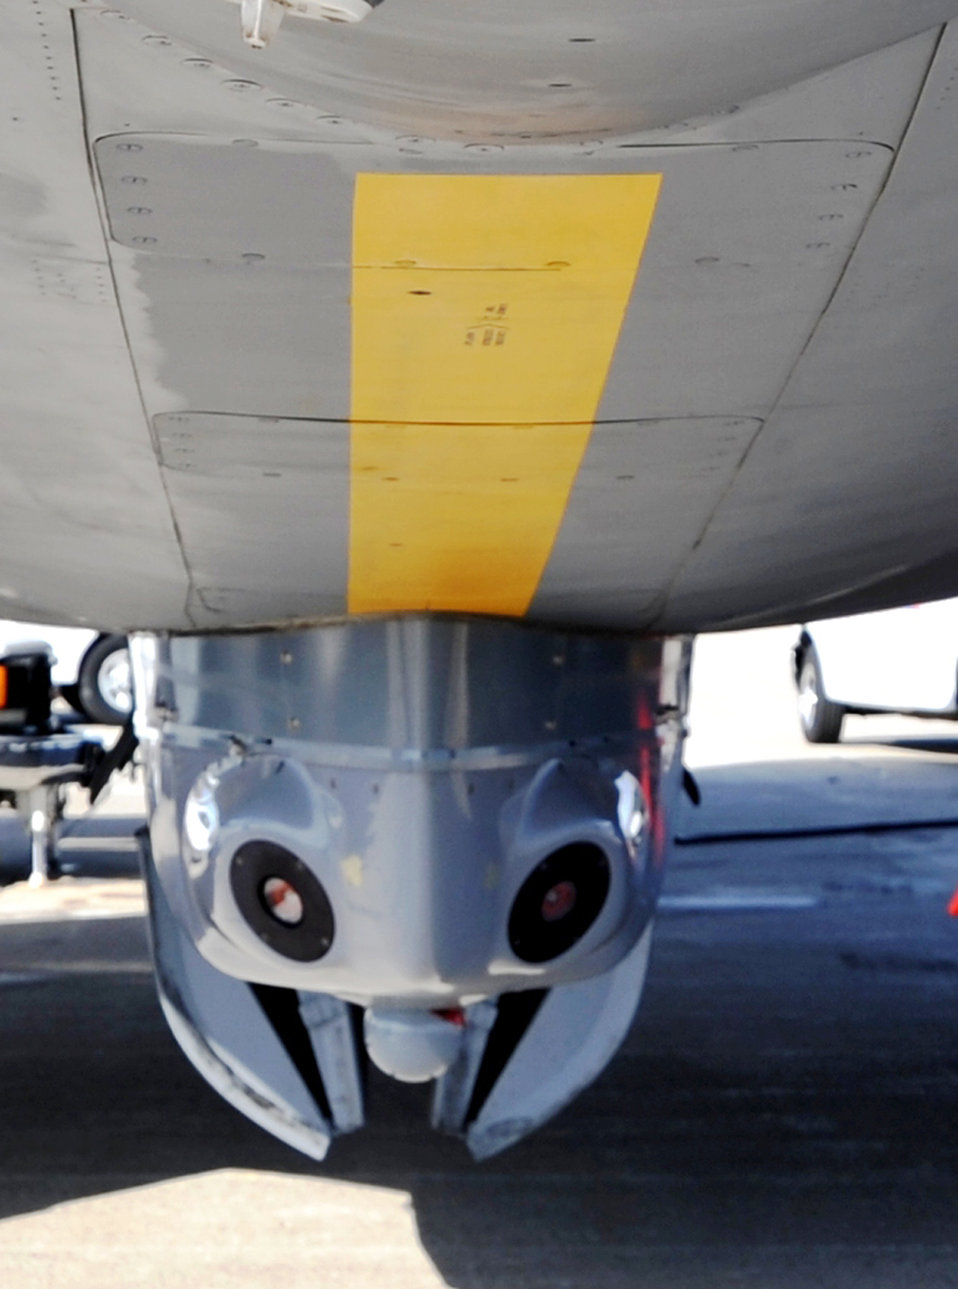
KC-135 LAIRCM

A Large Aircraft Infrared Countermeasures system pod is attached to a KC-135 Stratotanker on the flightline March 1, 2011, at Scott Air Force Base, Ill. The pod is a laser-based countermeasures system designed to detect and employ countermeasures against infrared-guided surface-to-air missiles.